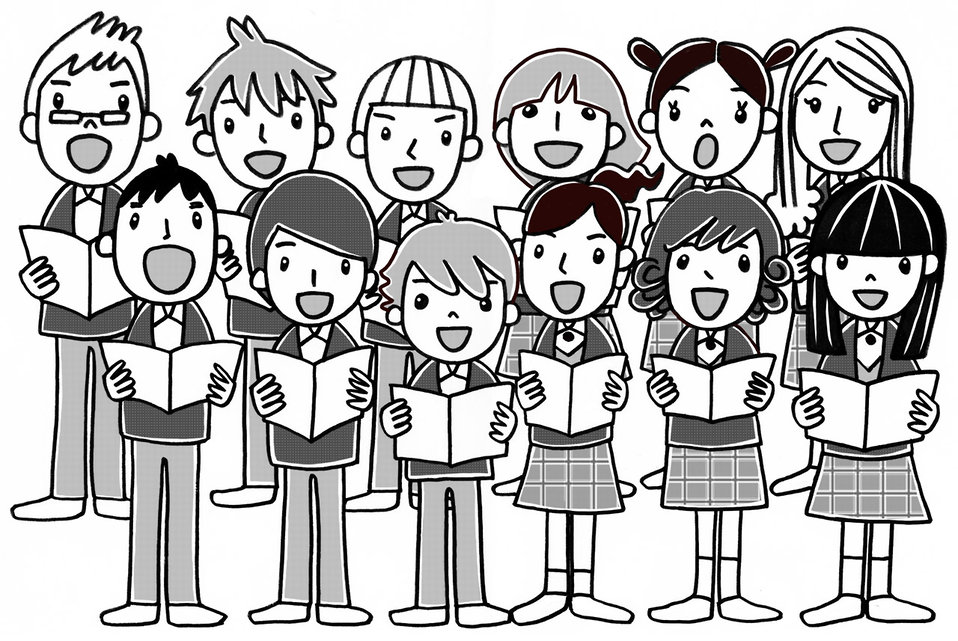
Singing children.